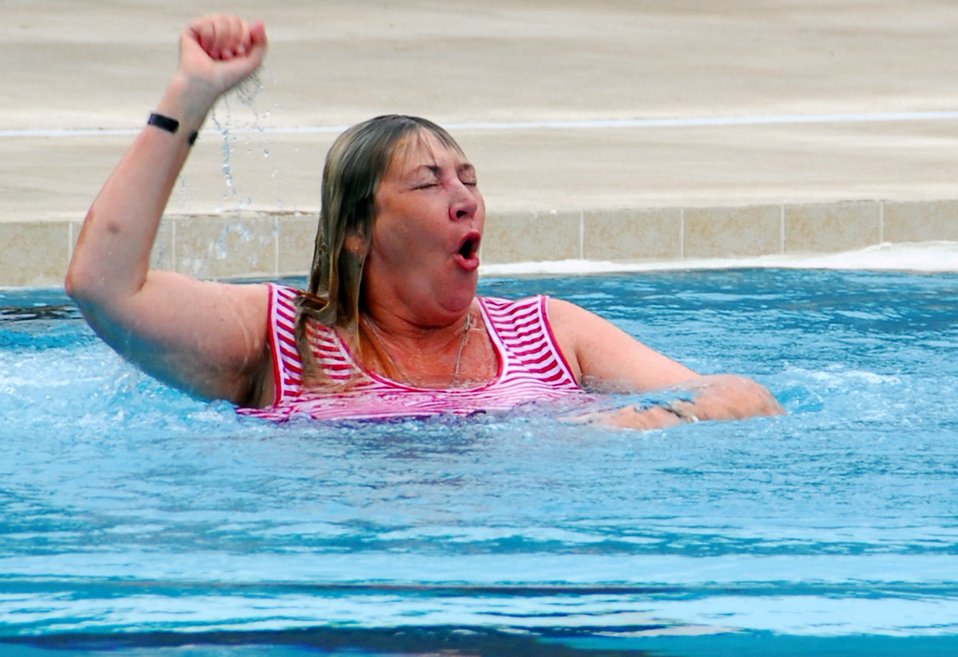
Fallen Airmen memorialized at Hurlburt

Debra Bastain, the mother of Capt. Derek Argel, a fallen Air Force special tactics officer, takes an impromptu dive into the pool at the aquatics training facility dedicated in Captain Argel's memory May 30 at Hurlburt Field, Fla. Captain Argel, who died in the crash of an Iraqi air force aircraft on Memorial Day 2005, was captain of the water polo team while a cadet at the U.S. Air Force Academy.